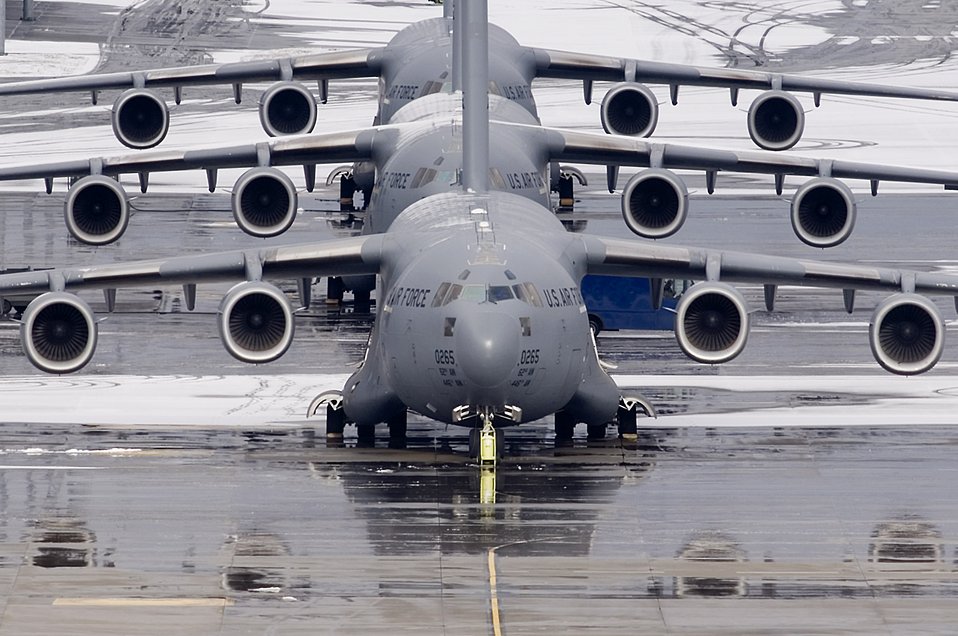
Cold shoulder

C-17 Globemaster IIIs wait to be deiced by maintainers from the 62nd Aircraft Maintenance Squadron Jan. 28 at McChord Air Force Base, Wash. Deicing prevents the reformation of ice prior to launch.